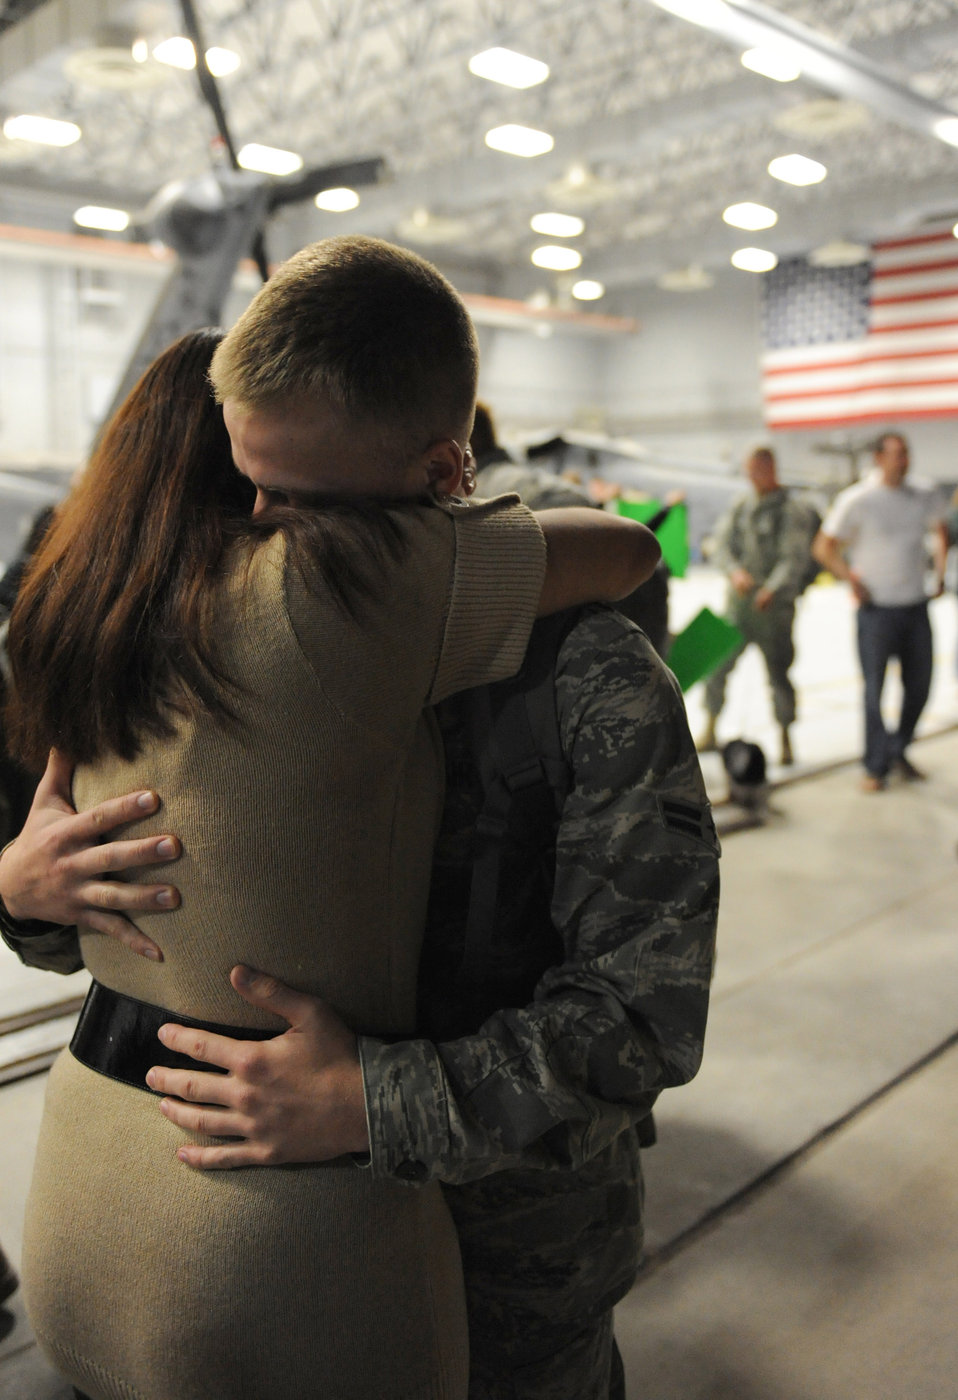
Home for the holidays

Airman 1st Class Daniel Rodgers embraces his wife, Airman 1st Class Stephanie Rubi, Dec. 6 at Nellis Air Force Base, Nev. Airmen with the 763rd Maintenance Squadron and 66th Rescue Squadron returned home after 3.5 months in Southwest Asia supporting the war on terrorism. He is an HH-60 avionics specialist assigned to the 763rd MXS and she is a still photographic apprentice assigned to the 99th Air Base Wing